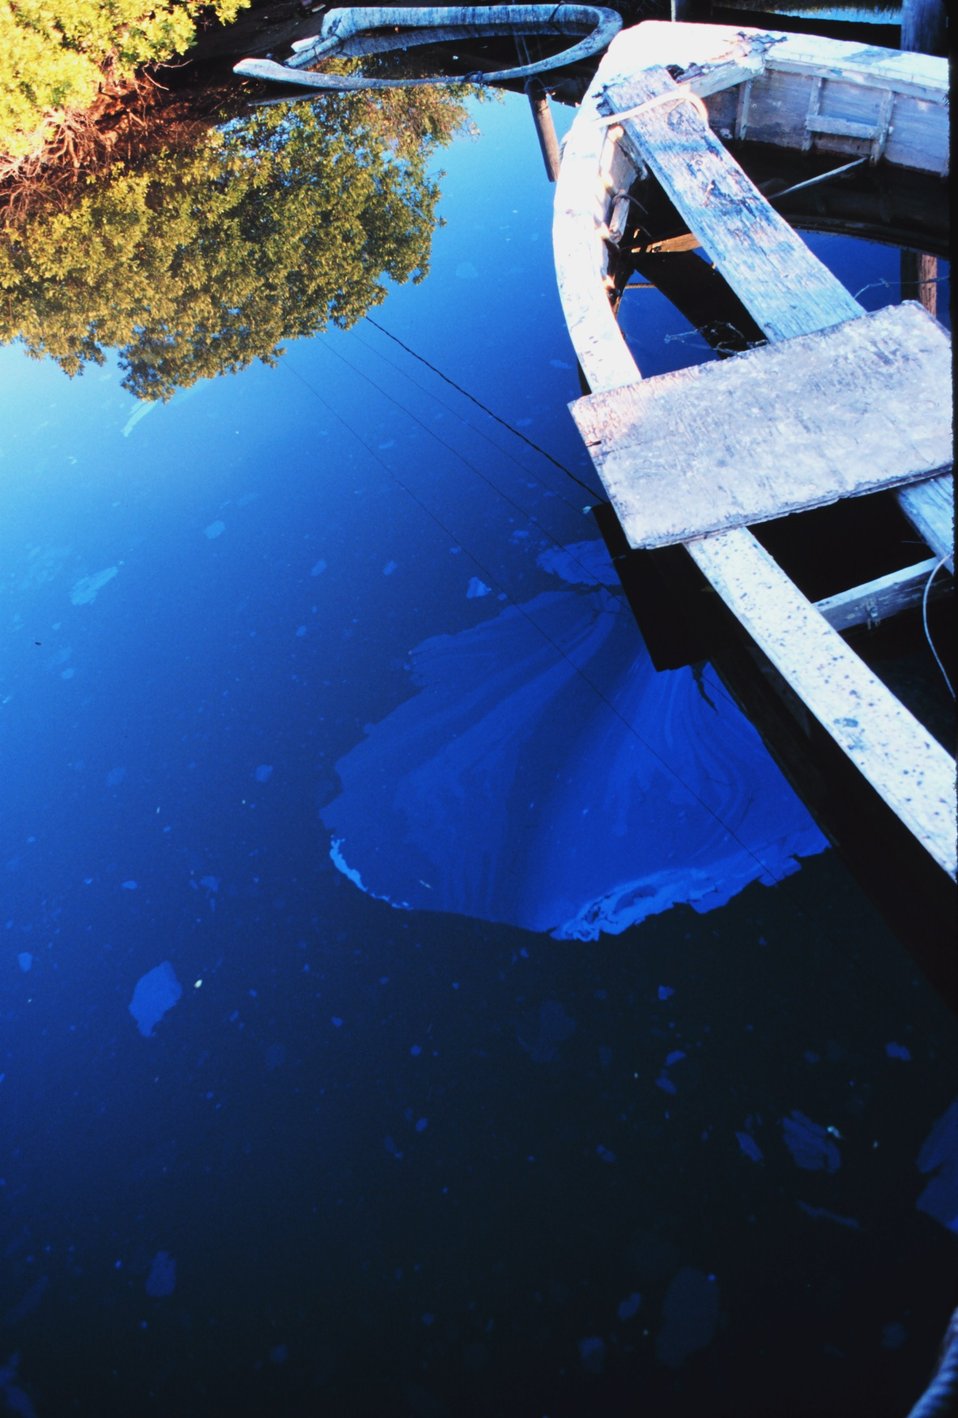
A derelict boat